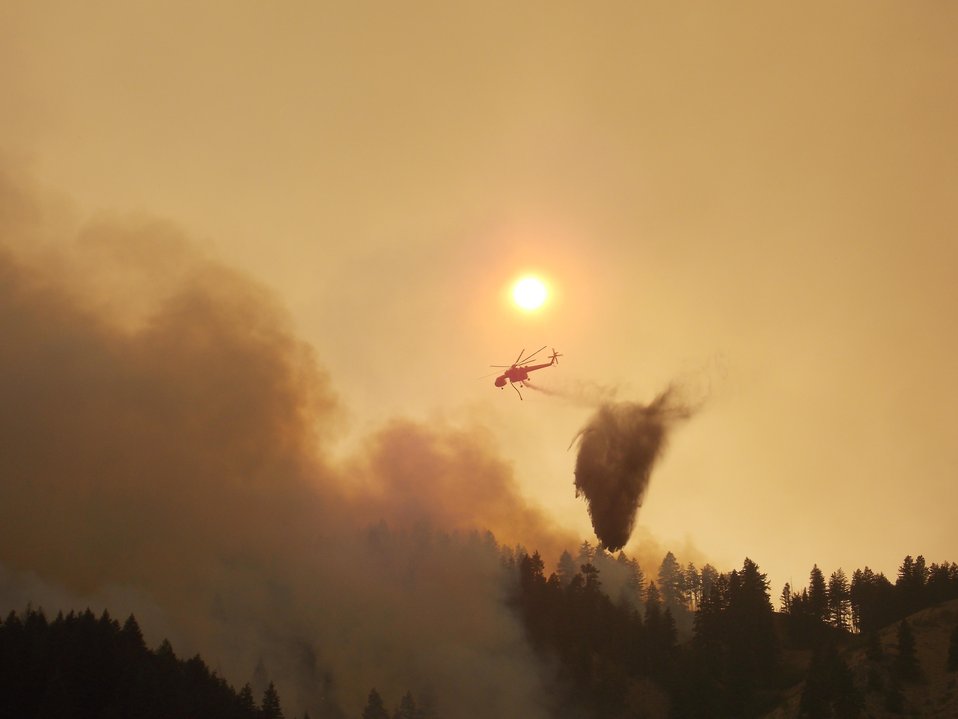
Sky crane drops water on the Elk complex Fire. The Elk Complex Fire in the Boise National Forest near Pine, ID began on Aug. 08, 2013 by lightning has consumed approximately 130,178 acres and is approximately 65% contained.